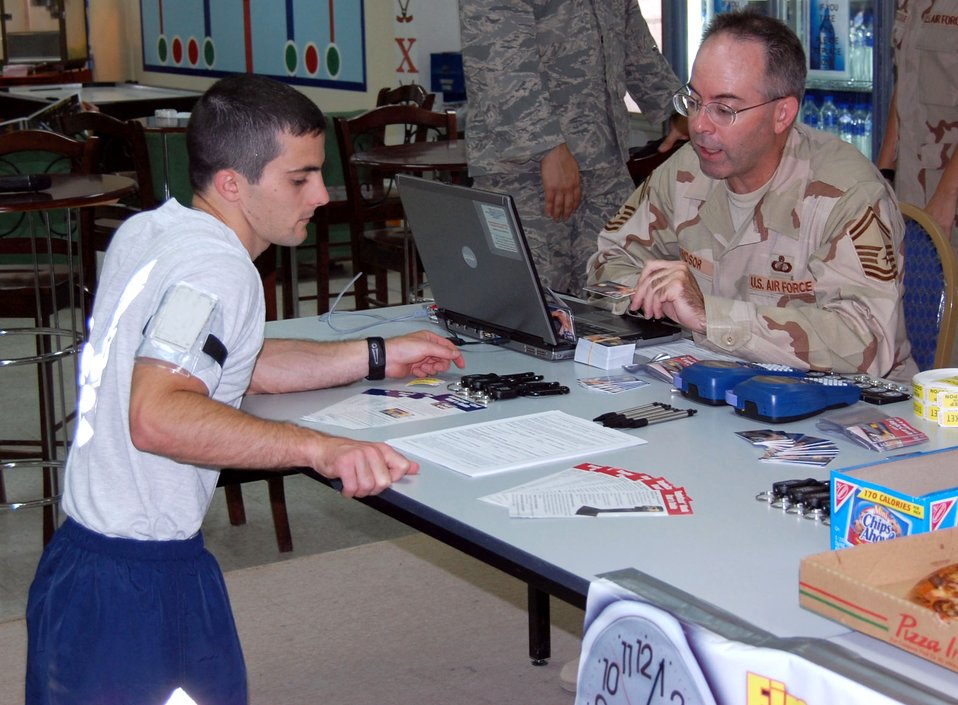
Eagle Cash card: money spreads its wings

2nd Lt. Jesse Bjurback discusses the importance of the Eagle Cash Card with Senior Master Michael Windsor Sept. 11 at the Flex Recreation Center in Southwest Asia. Airmen can load Eagle Cash cards from kiosks located around the base. Lieutenant Bjurback is an intelligence specialist from the 36th Intelligence Squadron from Langley Air Force Base Va., and Sergeant Windsor is a deputy dispersing officer for the Combined Air Operations Center.